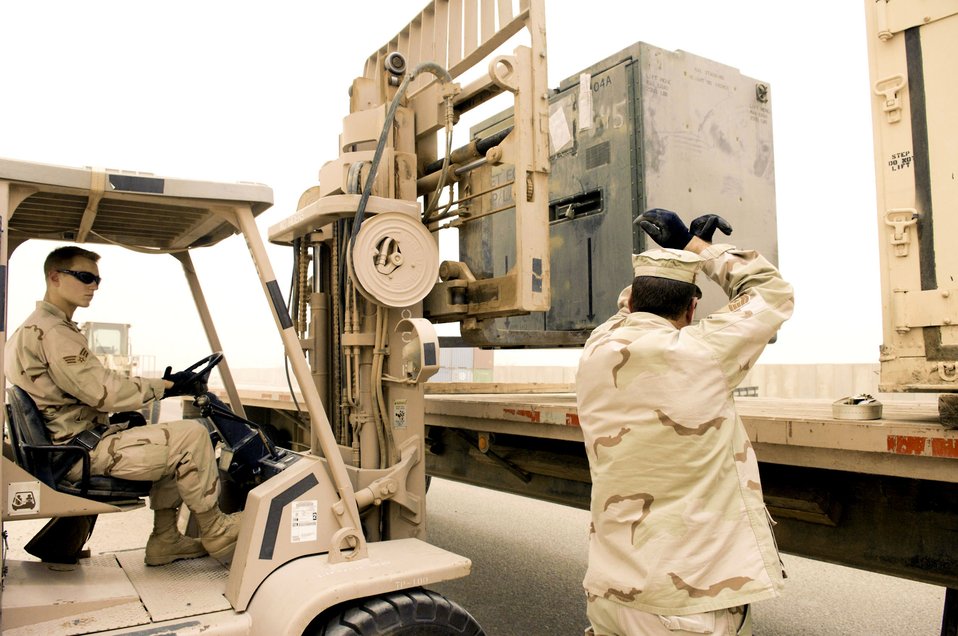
Fully armed

Enduring heavy dust and winds, Master Sgt. Steven Anderson directs Senior Airman Christopher Kieffer into position to place a container full of M-16's onto a trailer during a base-wide arming exercise June 14 at Ali Air Base, Iraq. Both are members of the 407th Expeditionary Logistics Readiness Squadron. Ali AB Airmen participated in the exercise to help fine-tune weapons distributing procedures in case of a real-world threat to the base.